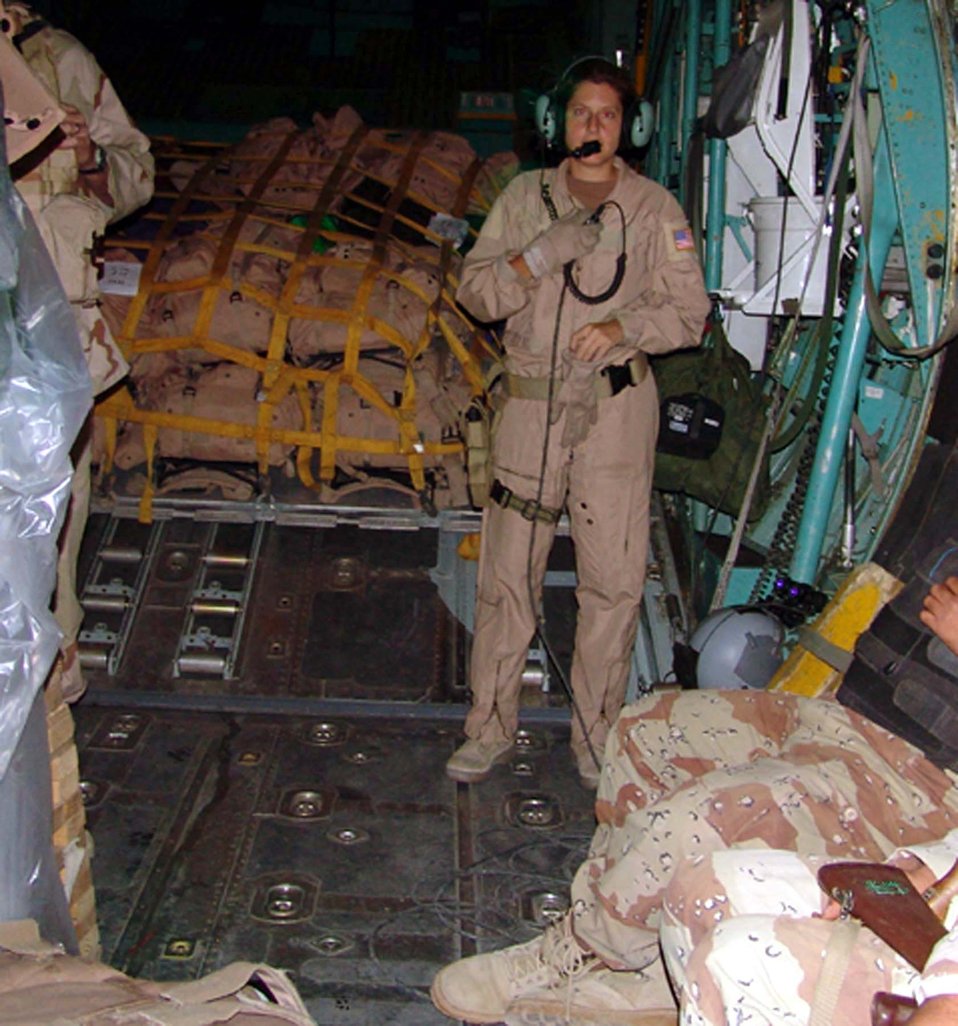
Sons of Iraq represent future, freedom

BAGHDAD, Iraq -- Staff Sgt. Jamie Mucciarelli helps Iraqi soldiers get comfortable during a flight on a C-130 Hercules. She is deployed here from the 41st Airlift Squadron at Pope Air Force Base, N.C.